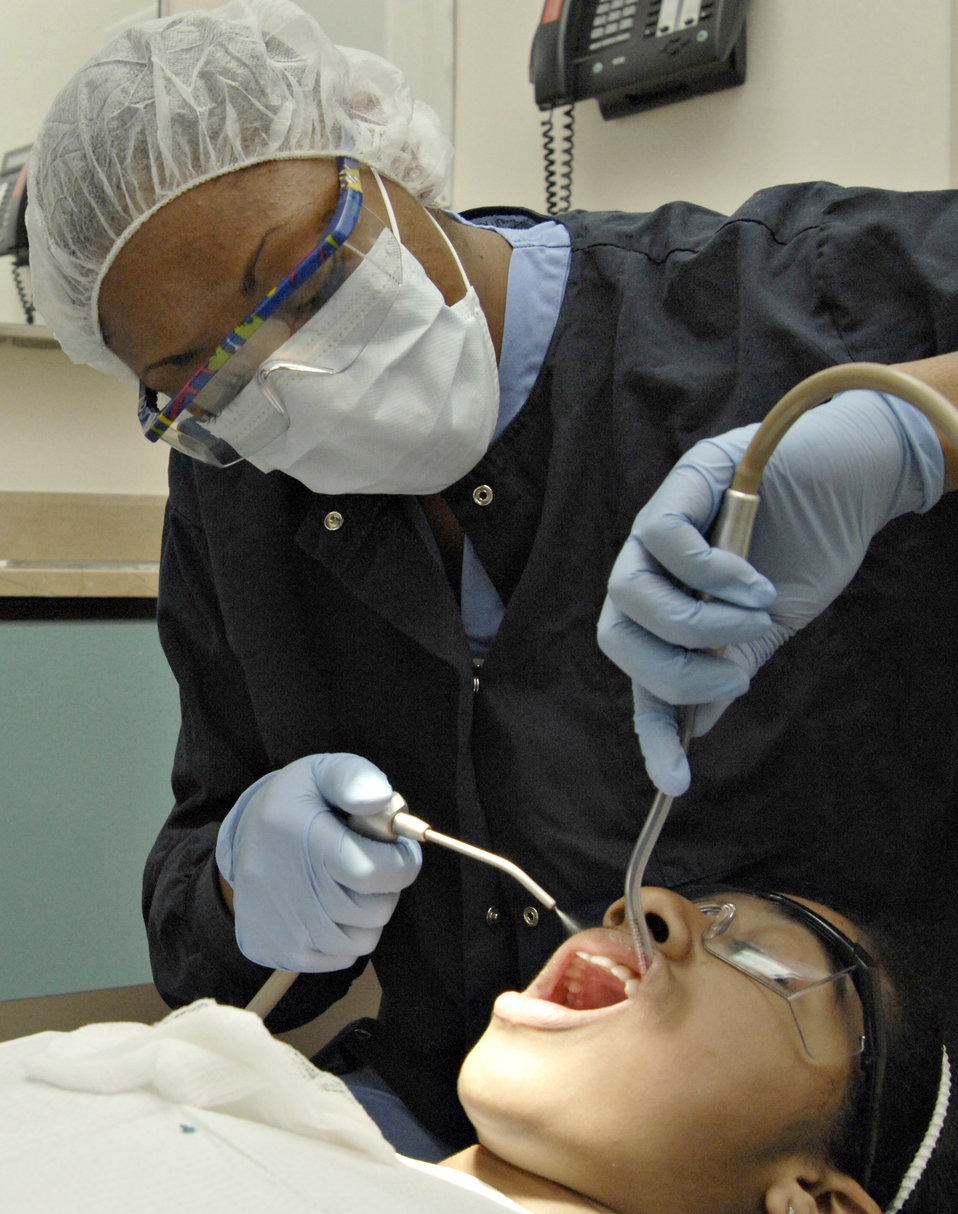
Incirlik officials celebrate Women's History Month

Senior Airman Chantel Wallace rinses the teeth of Maya Singh, daughter of Maj. Walter Singh, during a routine examination March 9 at Incirlik Air Base, Turkey. Airman Wallace is one of many dental technicians who help ensure Incirlik AB Airmen are fit to fight. Women's History Month is celebrated throughout March to highlight American women of the past, present and future, and their accomplishments throughout the years. Airman Wallace is assigned to the 39th Medical Operations Squadron.